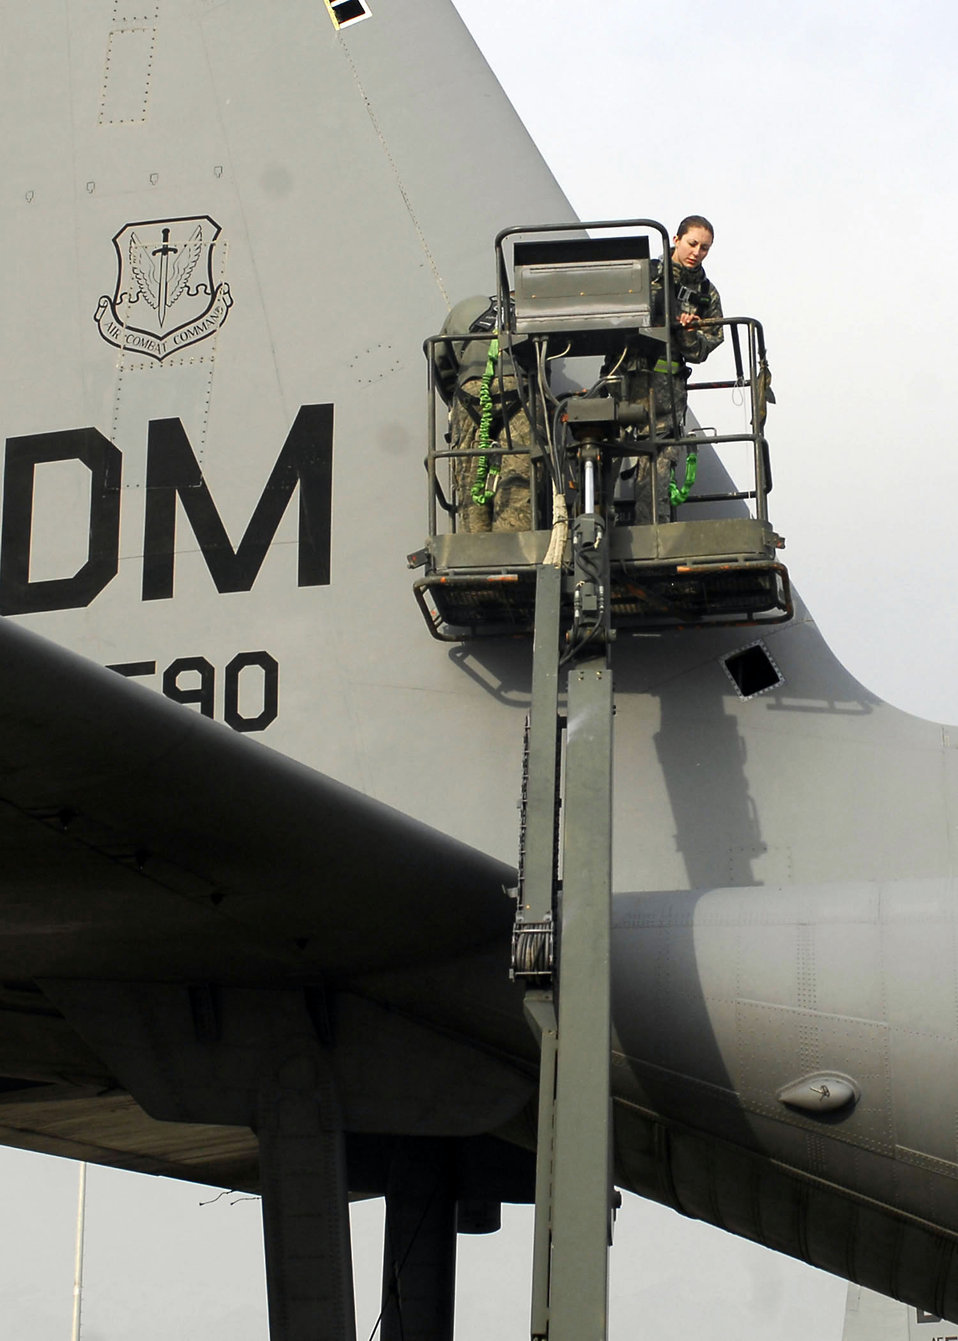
Keep it in perspective

Airman First Class Sarah Garrett, an electronic warfare specialist from the 41st Expeditionary Electronic Combat Squadron, lowers herself and Tech.Sgt. Lee Fortner to the ground after inspecting an EC-130 Compass Call Dec. 3, 2009, at Bagram Airfield, Afghanistan. The Airmen are deployed from Davis-Monthan Air Force Base, Ariz.